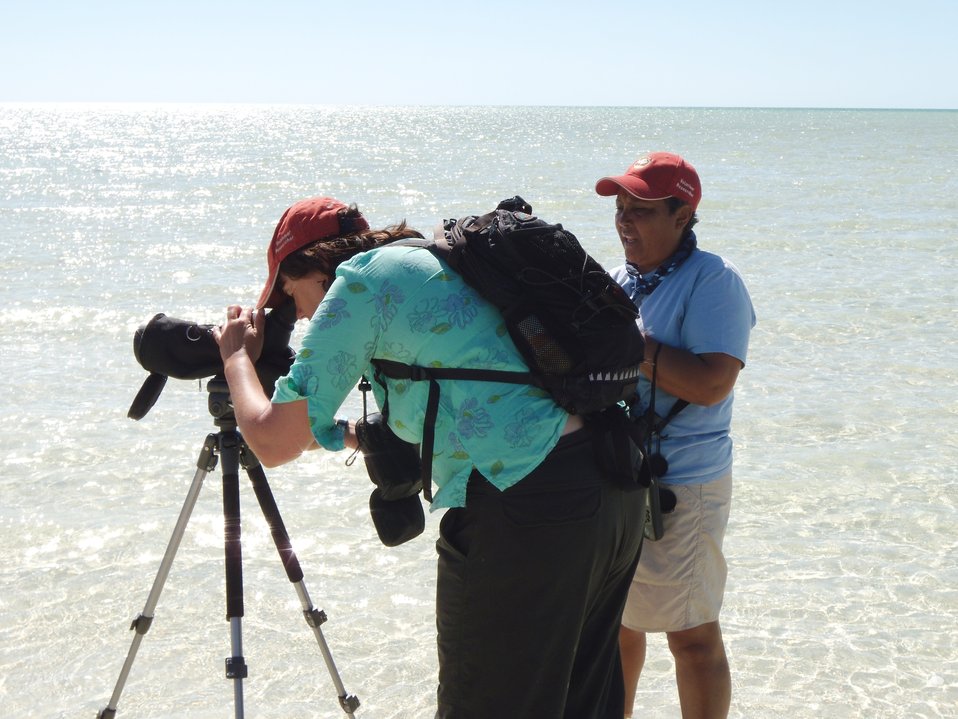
Sue Abbott, Bird Studies Canada; and Predensa Moore, Bahamas National Trust

Working on New Providence Island.